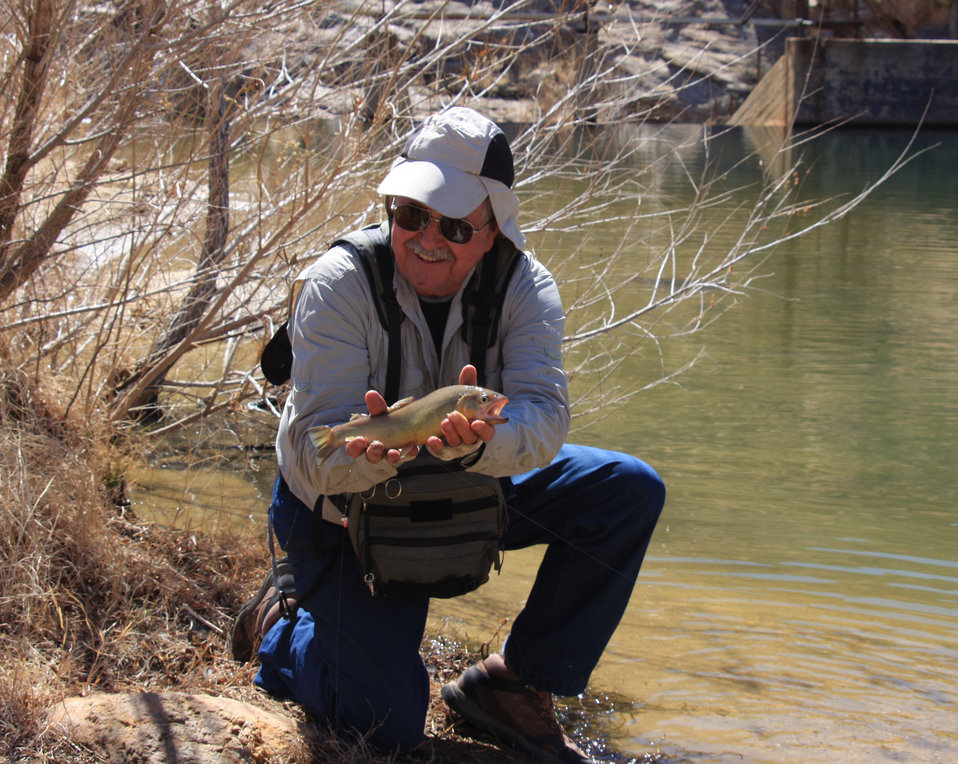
First Catch

John Marvin of Sierra Vista, Arizona caught the first Gila trout in Arizona just moments after the native fish were stocked in Frye Mesa Reservoir in the Pinaleno Mountains on Feb. 23, 2010. Marvin, a member of the San Pedro Fly Casters Association, said he used a 'Marvin Special' fly to land the record fish. The Gila trout project, funded by the American Recovery and Reinvestment Act, created the first Gila trout season in Arizona.